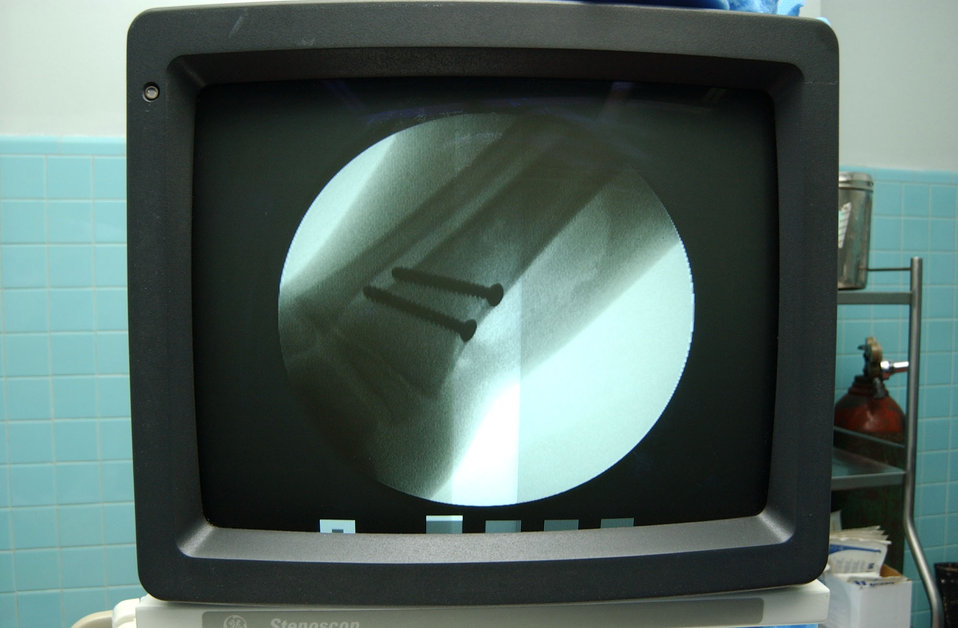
Americans, Hondurans team to fix broken bones

X-rays taken of a 6-year-old boy who was hit by a taxi causing an open fracture to his leg show the screws placed during surgery Aug. 15 at the Hospital Esquela in Tegucigalpa, Honduras. The procedure was accomplished as part of a pediatric orthopedic medical readiness training exercise. A medical team of eight people from Wilford Hall Medical Center at San Antonio and Joint Task Force-Bravo at Soto Cano Air Base, Honduras, treated more than 200 people and operated on more than 60 individuals during its two-week training exercise Aug. 5 to 19.